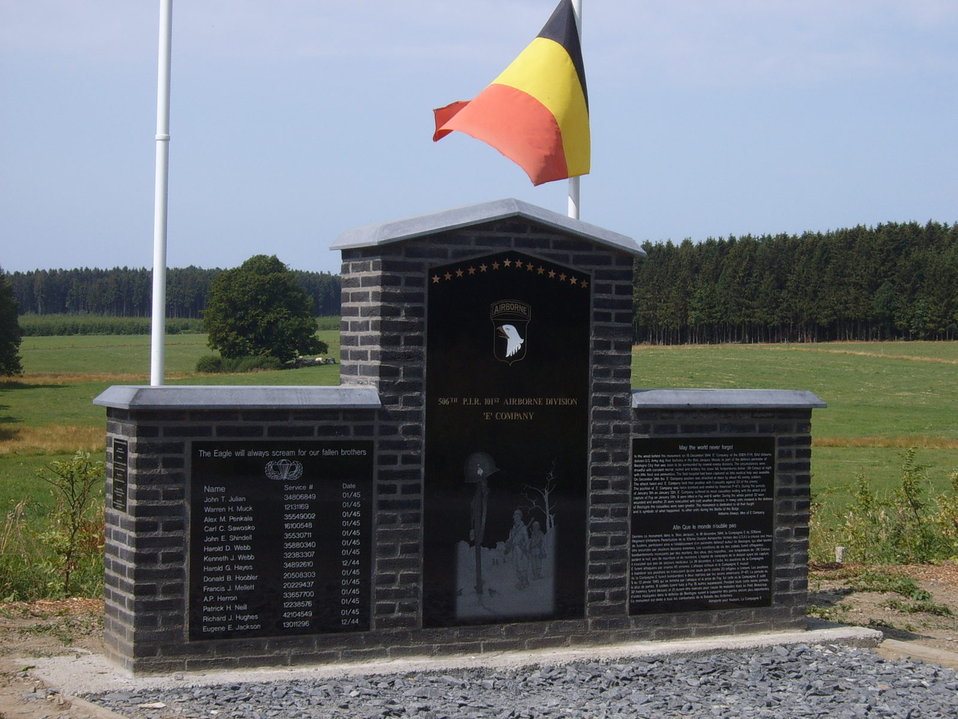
Monument for the easy Company, en:Foy, en:Bastogne Personal picture, I set it in public domain. Vberger 11:23, 22 July 2006 (UTC)